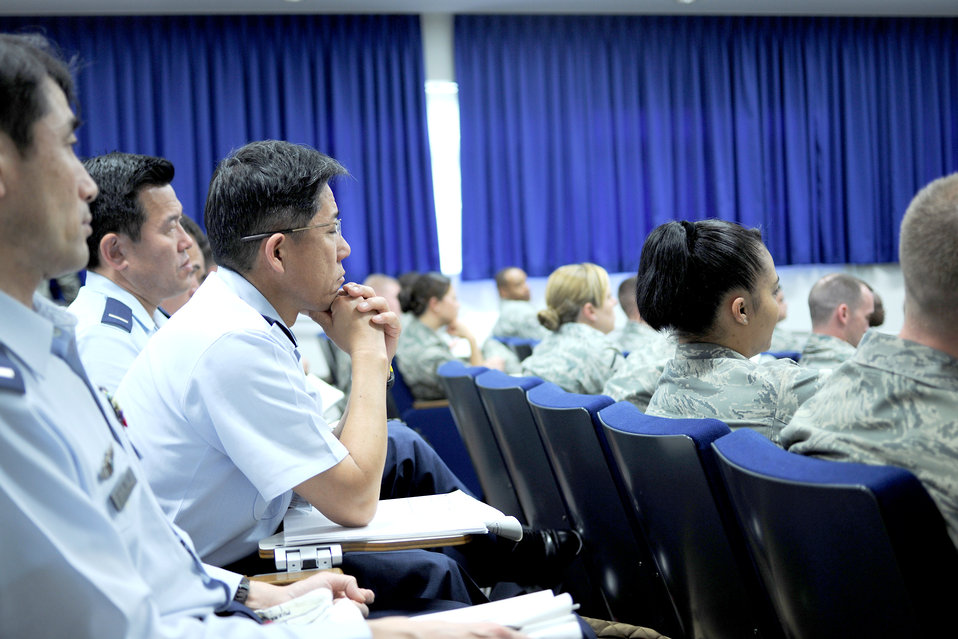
1st Shirt Symposium

Japan Self Defense Force senior enlisted leaders joined U.S. Airmen from around Japan to learn how to better care for their Airmen during the Additional Duty First Sergeant Seminar May 11 through 14, 2010, at Yokota Air Base, Japan. The five day seminar covered topics including financial responsibilities, administrative actions and suicide prevention.